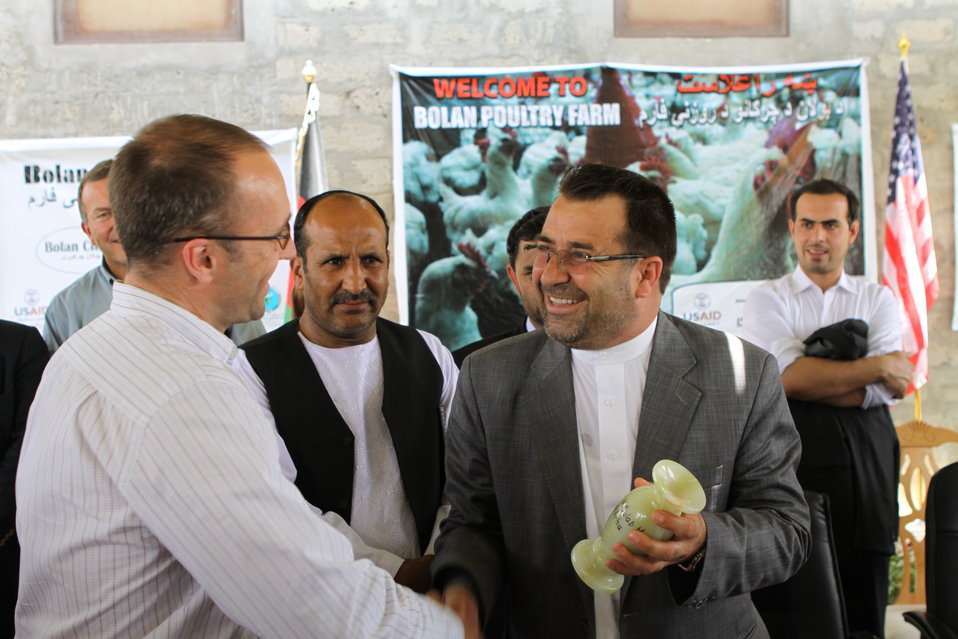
Bolan Poultry Farm